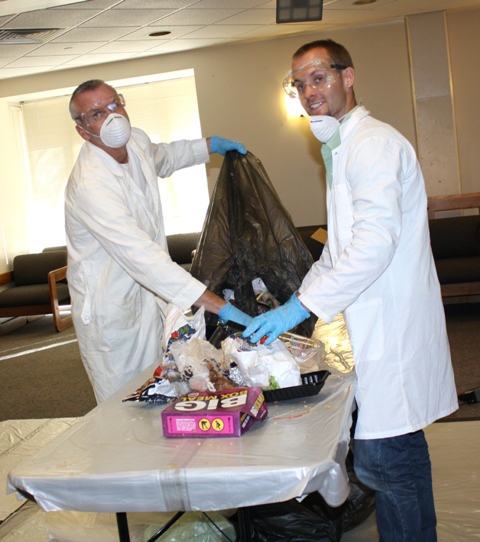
November 15, 2013 - Do You Know What's in a Landfill?

Auraria Campus, Denver, CO

With EPA-supplied bench scales, volunteers weighed 26 bags of compost, recycle, and landfill materials gathered from the Tivoli’s 3-bin collection stations